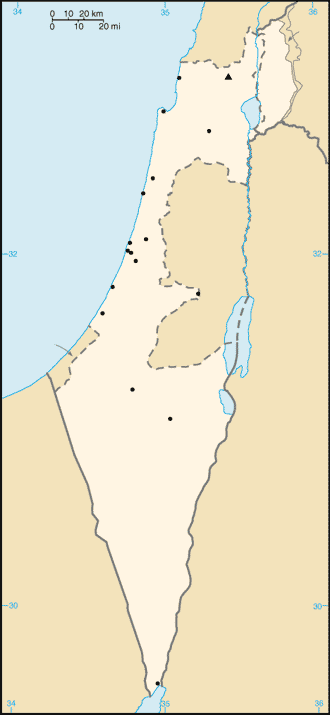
Map of Israel with the Golan Heights shaded